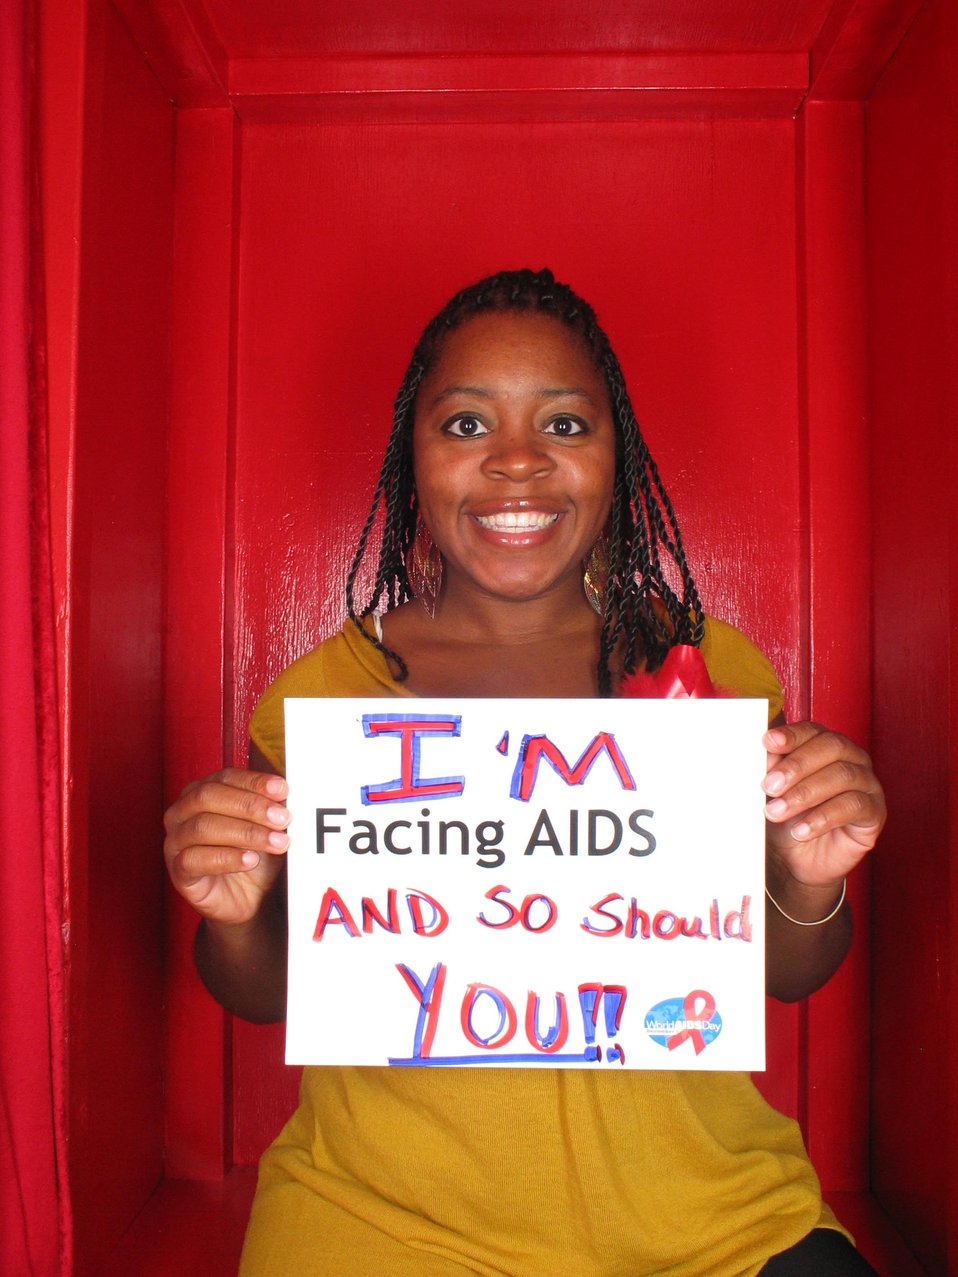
I'm Facing AIDS and so should you!!!